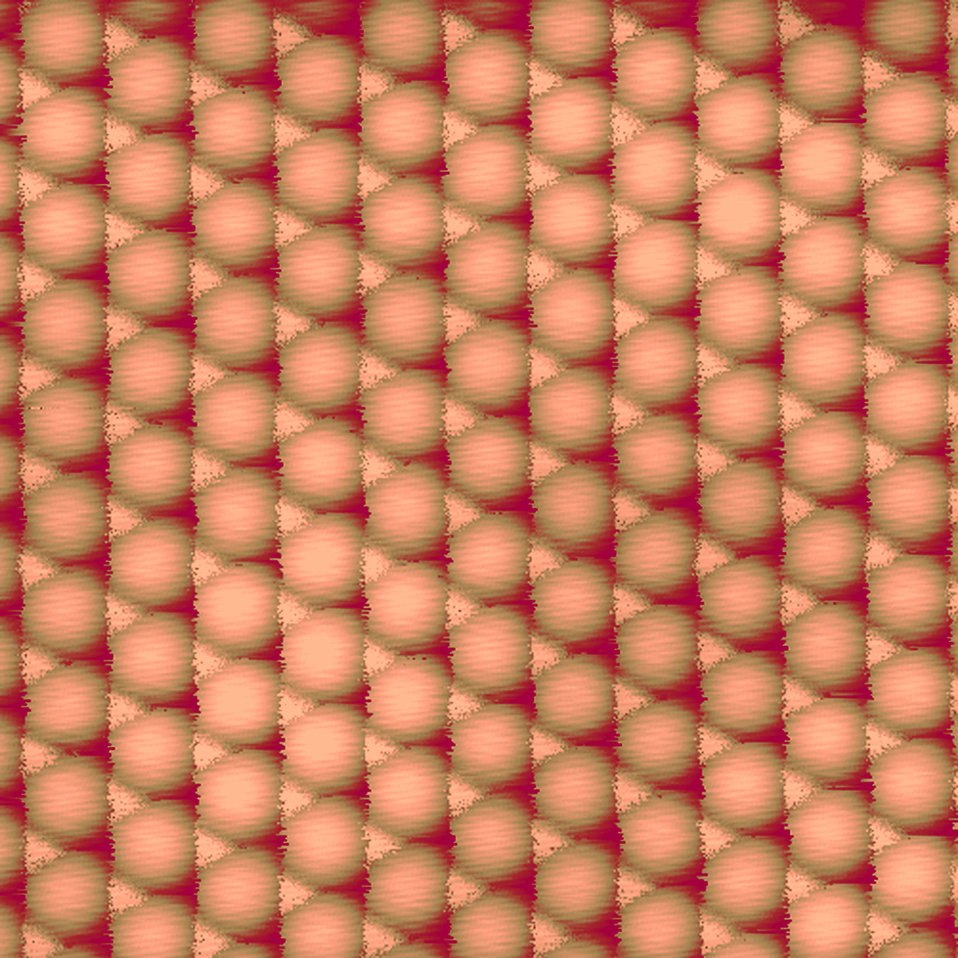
Quantum Physics; Nanoscale Devices

Colorized version of an image created by the NIST custom-built scanning tunneling microscope as it drags a cobalt atom across a closely packed lattice of copper atoms. Large round features show the cobalt atom bonding to the copper at its preferred, lowest energy bonding site. Bright triangle-shaped areas show the atoms bonding at a higher energy site. The atom 'screeches in protest' when the STM tip forces it to sit at this site. Dark areas show positions that the atom 'hops' over, refusing to bond at all.

Credit: Joseph Stroscio; Robert Celotta/NIST